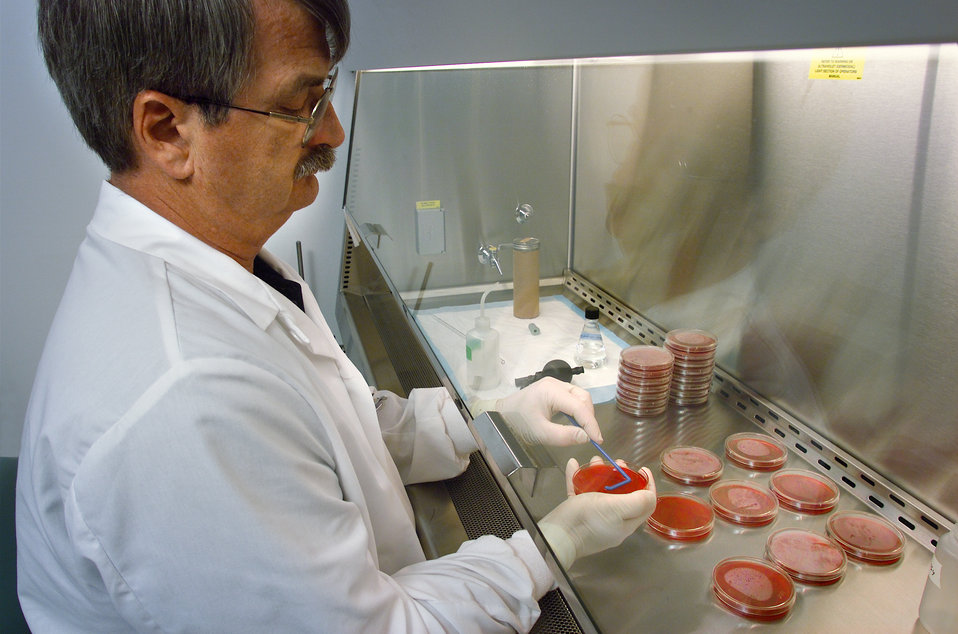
Arnold Steigerwalt, a research chemist with the Centers for Disease Control's Meningitis and Special Pathogens Branch (MSPB) in the National Center for Infectious Diseases (NCID), was shown here as he was performing a DNA-DNA hybridization analysis in one of the CDC's laboratories.